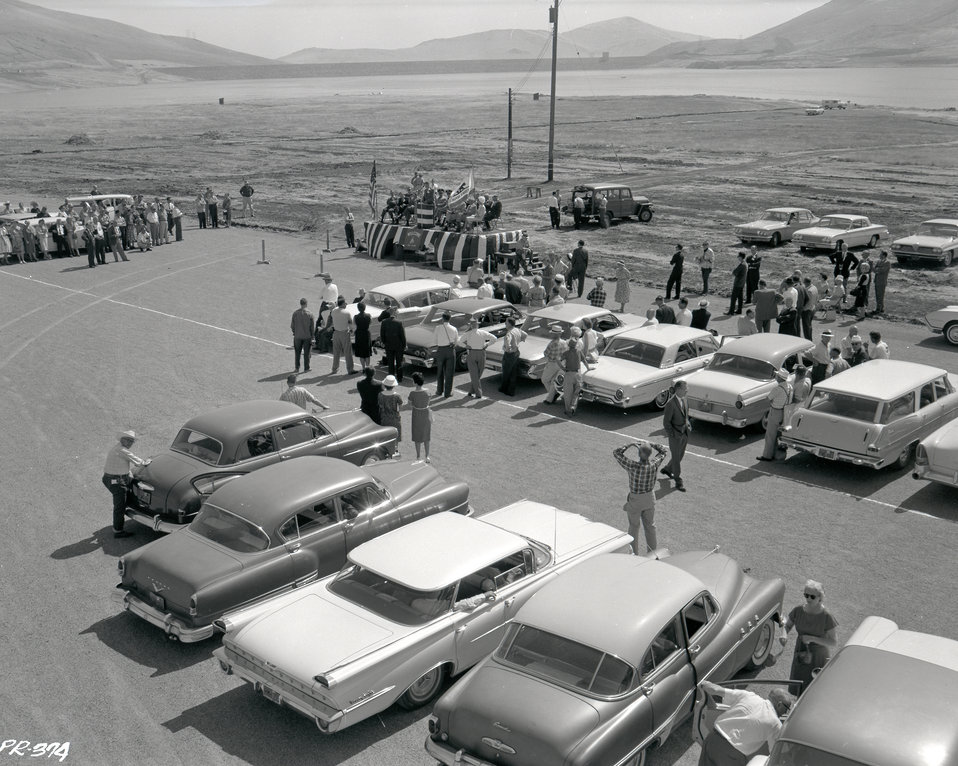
Success Dam

A historical view of the 1962 dedication ceremony at Success Dam, located near Porterville, Calif. The U.S. Army Corps of Engineers Sacramento District completed construction of Success Dam in 1961 and the reservoir provides flood risk management, water storage and recreational benefits to the local area.